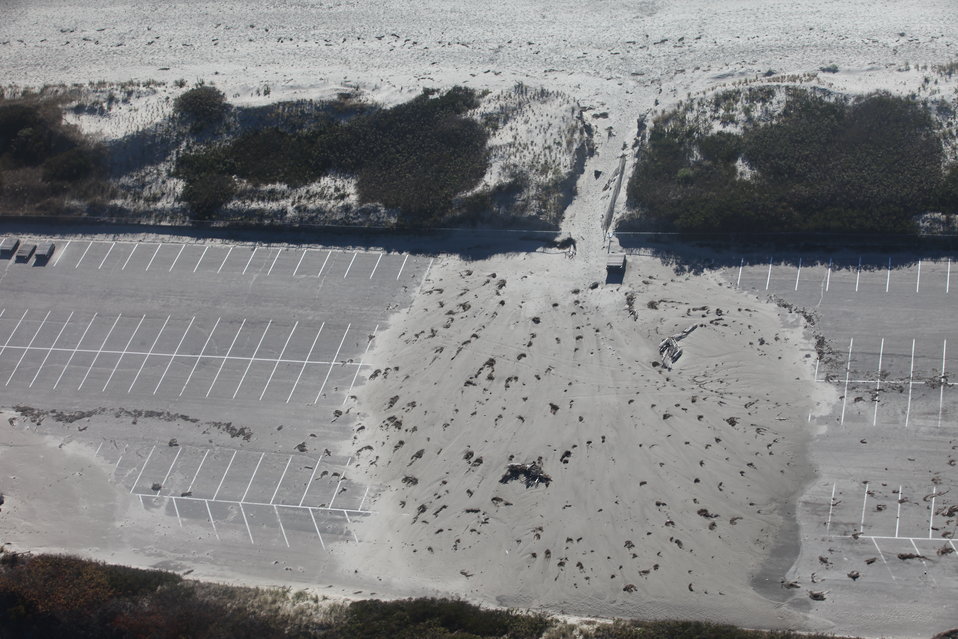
Beach overwash onto parking lot (RI)

Aerial photo of beach overwash onto a parking lot caused by Hurricane Sandy.